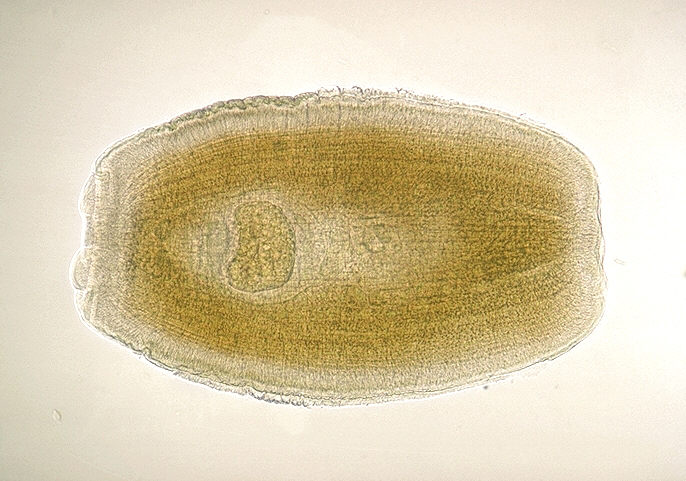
Proglottid of Mesocestoides sp. Unstained.